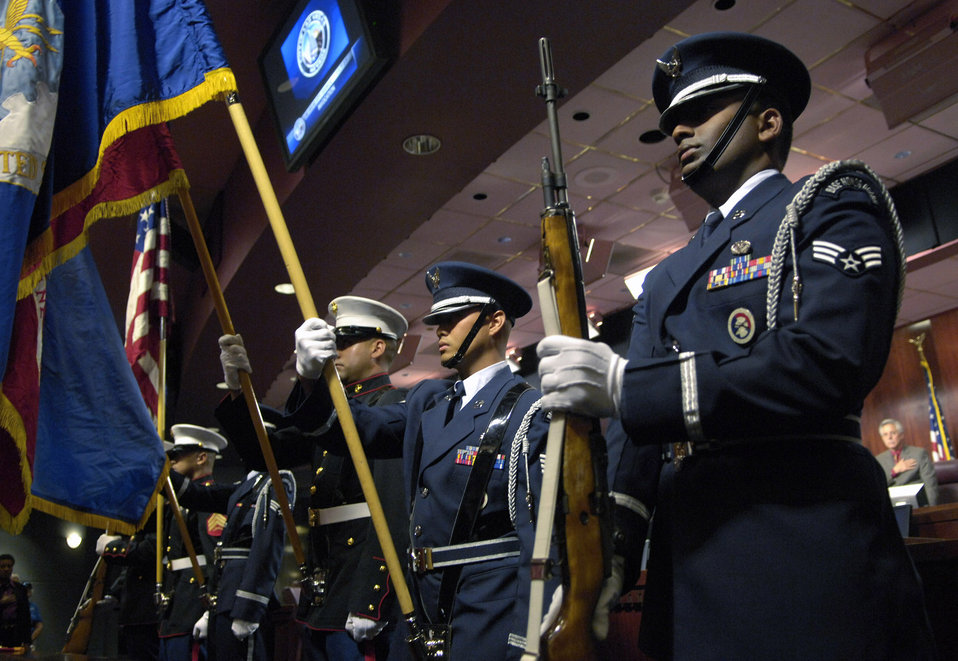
Aviation pioneers attend Heritage to Horizons ceremony

A joint color guard present the colors at a city council meeting Nov. 7 in Las Vegas. The special meeting was used to honor the Marine Corps' 232nd birthday and also to present the Air Force with a certificate recognizing the week of Nov. 5 through 11 as Air Force Week in Las Vegas.